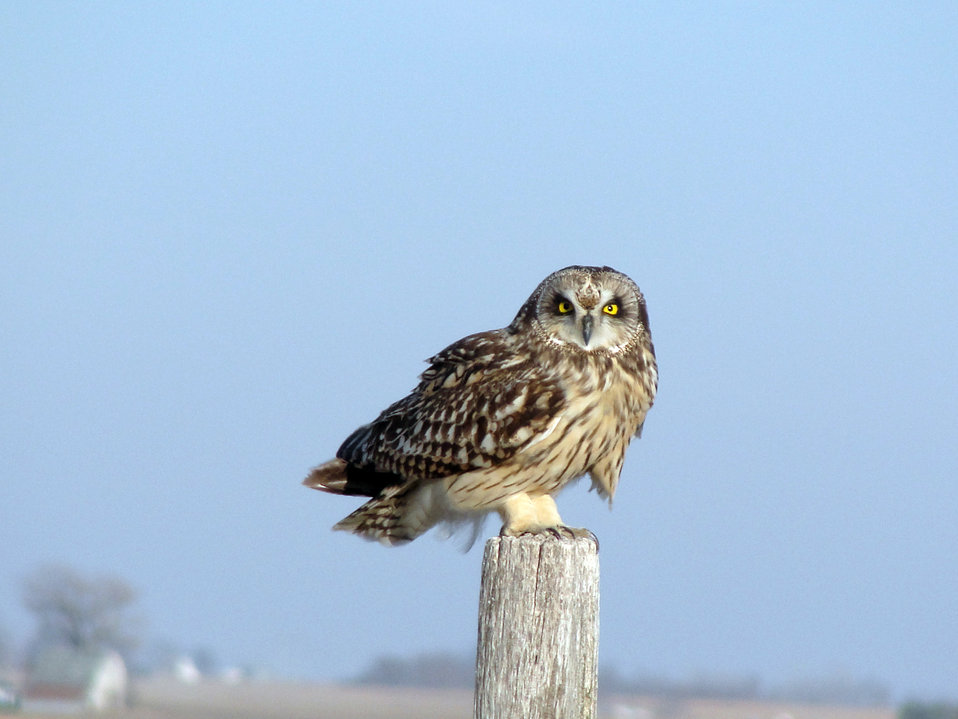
Short-eared Owl at Neal Smith National Wildlife Refuge